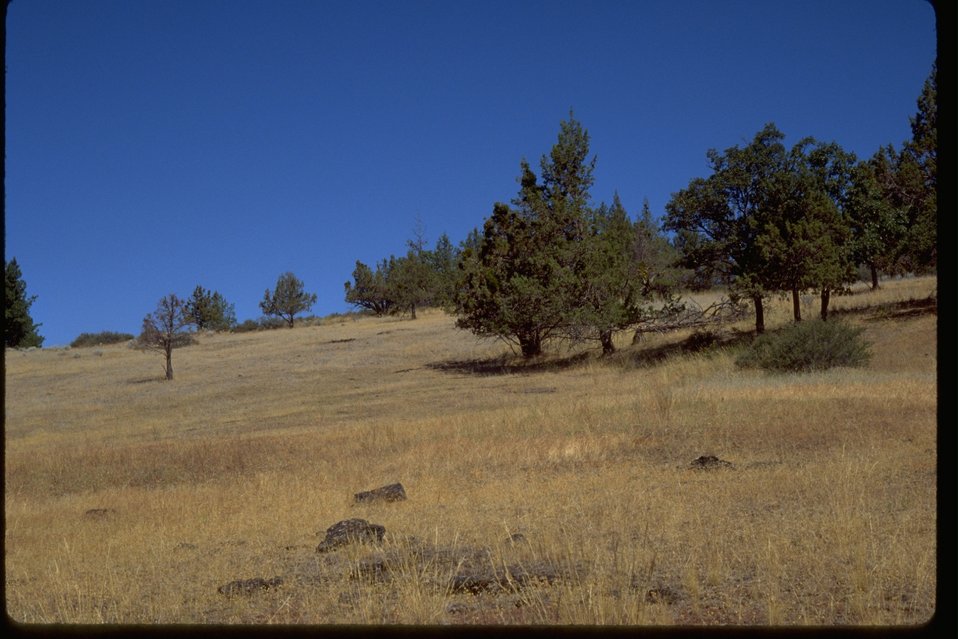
Agate Flats.